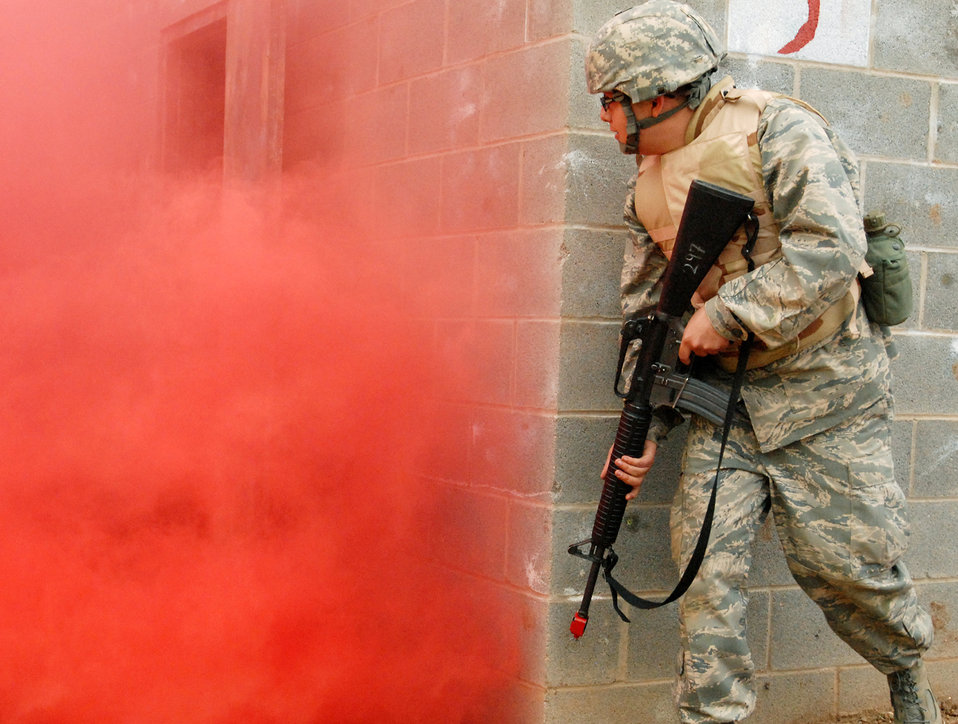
I can't see anything

Air Force ROTC Cadet John Lowery waits for the smoke to clear before he moves during a training exercise to rescue a